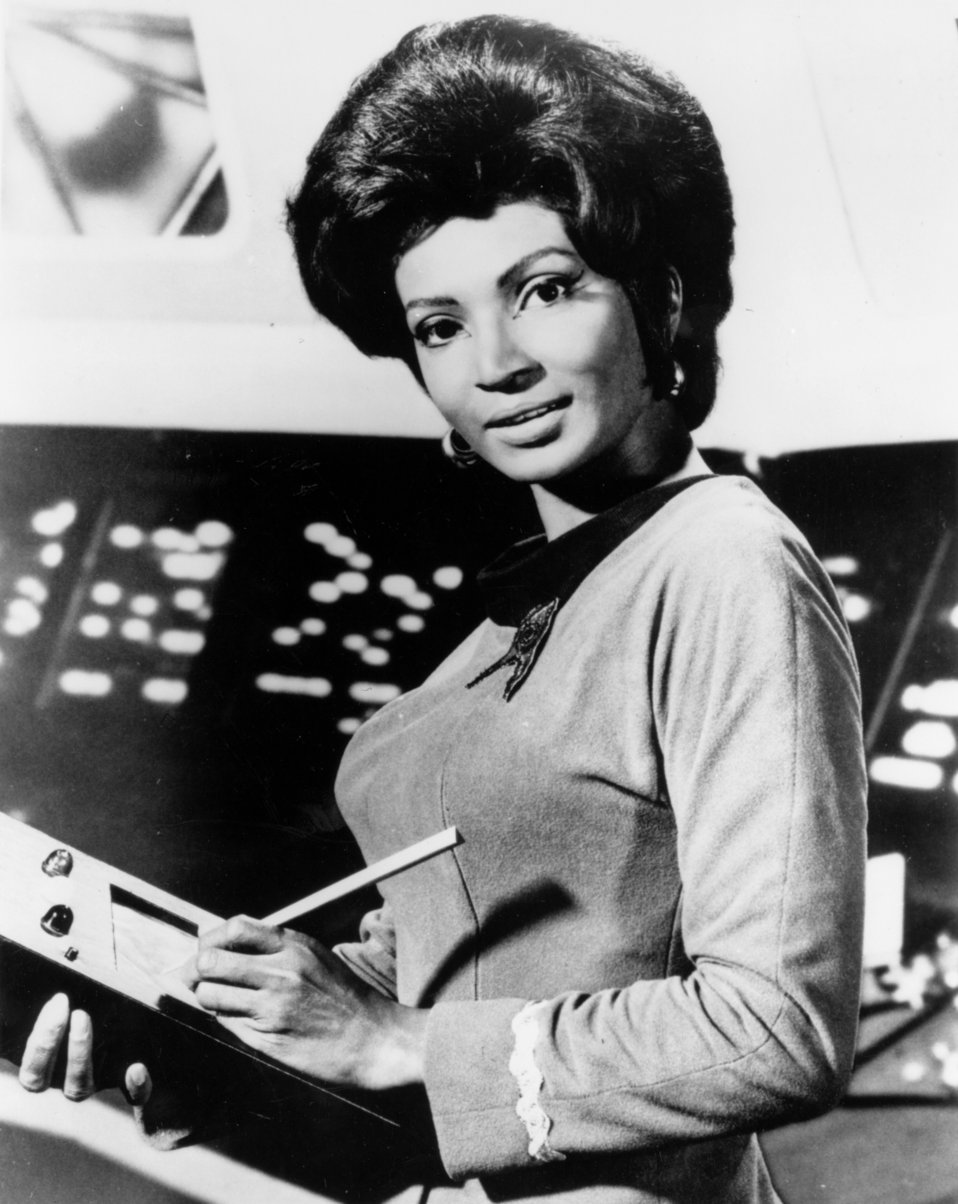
Nichelle Nichols as Lt. Uhura on the original Star Trek did much to recruit African-Americans into the NASA space program